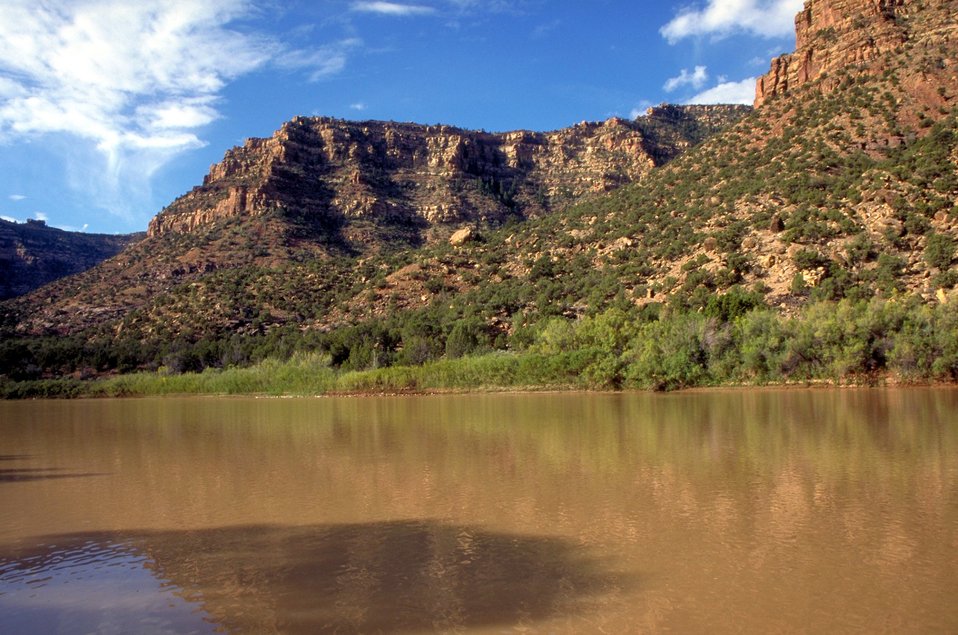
Desolation/Gray Canyons near Price, Utah.